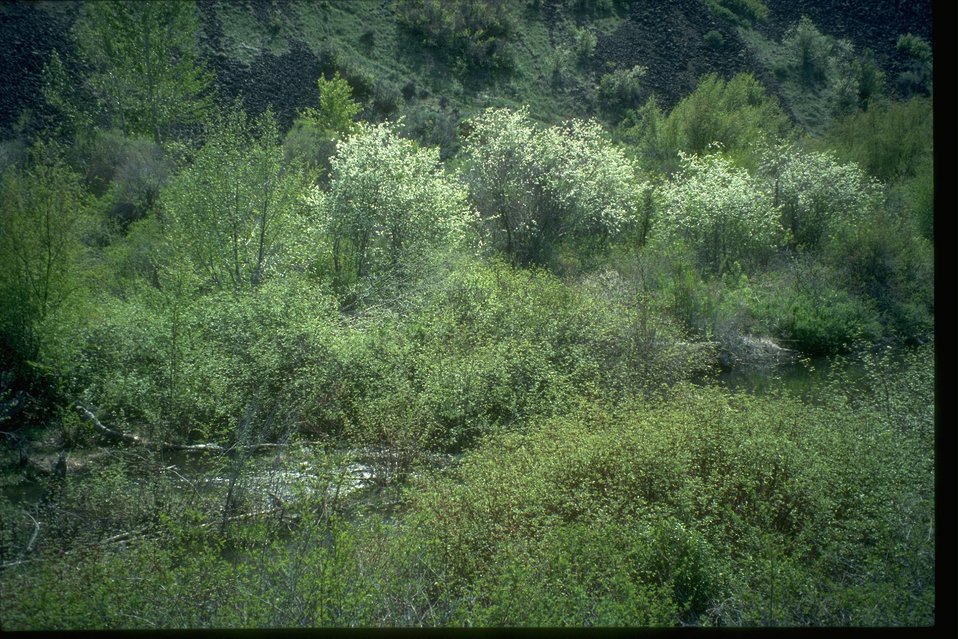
Colockum Creek functioning properly in Central Washington.